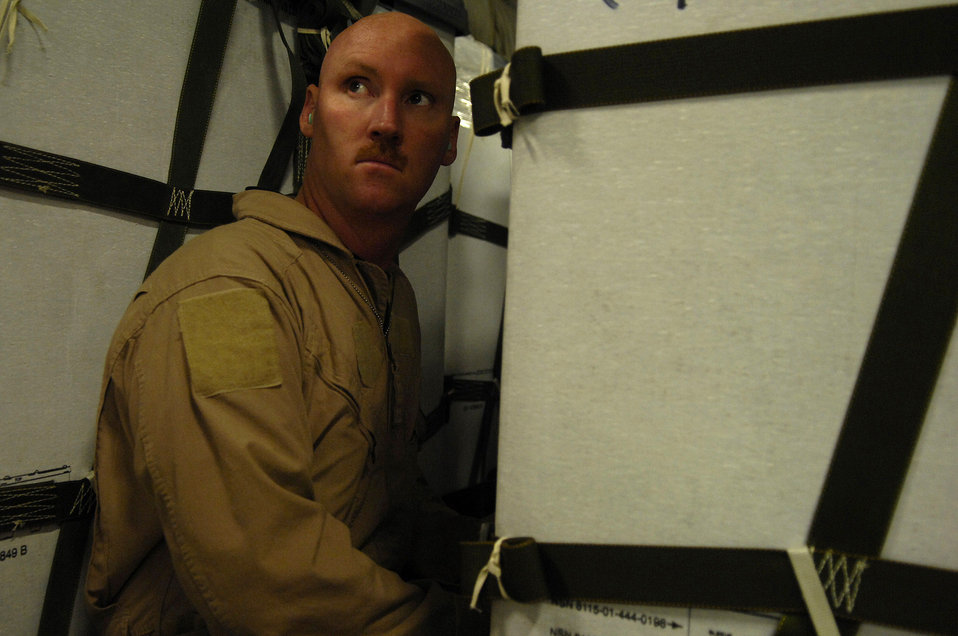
Afghanistan airdrop

Staff Sgt. Chris Koch checks a bundle on a C-17 Globemaster III for a Joint Precision Airdrop Delivery System of 40 bundles of humanitarian supplies to a drop zone April 14 in Afghanistan. Sergeant Koch is a loadmaster from the 17th Airlift Squadron from Charleston Air Force Base, S.C., and is deployed to the 816th Expeditionary Airlift Squadron in Southwest Asia.